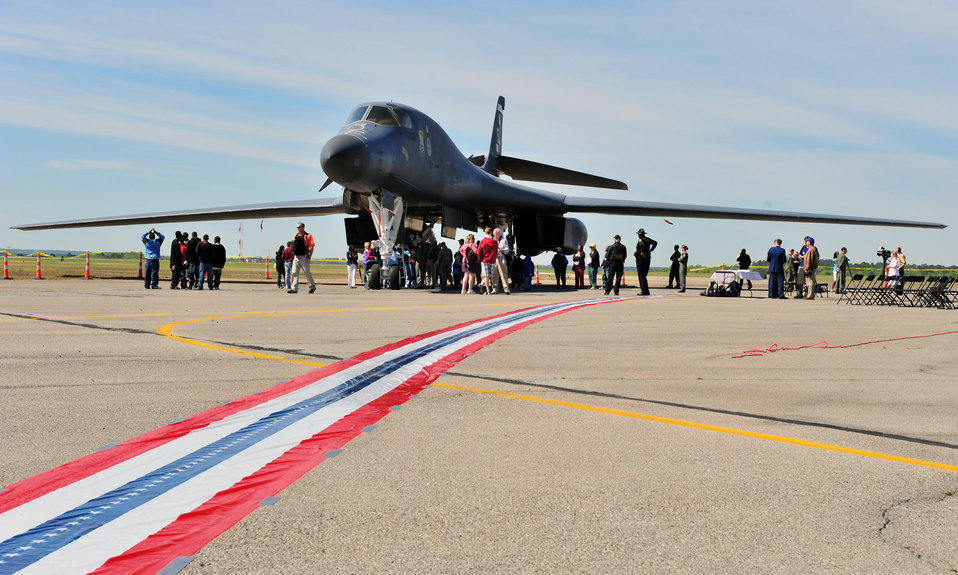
Thousands honor Doolittle Raiders at the 67th Reunion

A 467-foot ribbon commemorating the take-off distance the Doolittle Raiders had on the USS Hornet, leads from a hangar door to a B-1 Lancer. It was part of the celebration at Columbia Metro Airport in Columbia, S.C., during the 67th Doolittle Raider Reunion. The 34th Bomb Squadron bomber was flown in from Ellsworth Air Force Base, S.D.